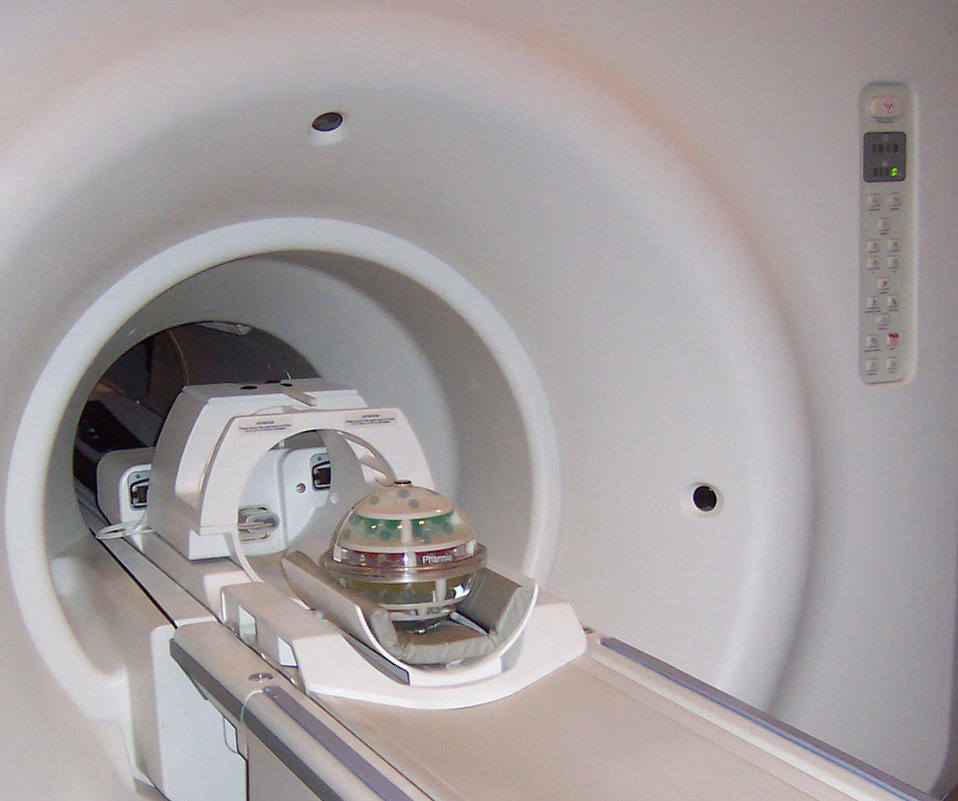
MRI

Phannie is the first 'phantom' for calibrating magnetic resonance imaging (MRI) machines that is traceable to standardized values. The plastic sphere is about the size of a person's head and filled with 100 smaller spheres used as contrast-enhancing agents and measurement reference markers. NIST researchers in Boulder, Colo., built Phannie and tested it on an MRI scanner at the University of Colorado Brain Imaging Center.